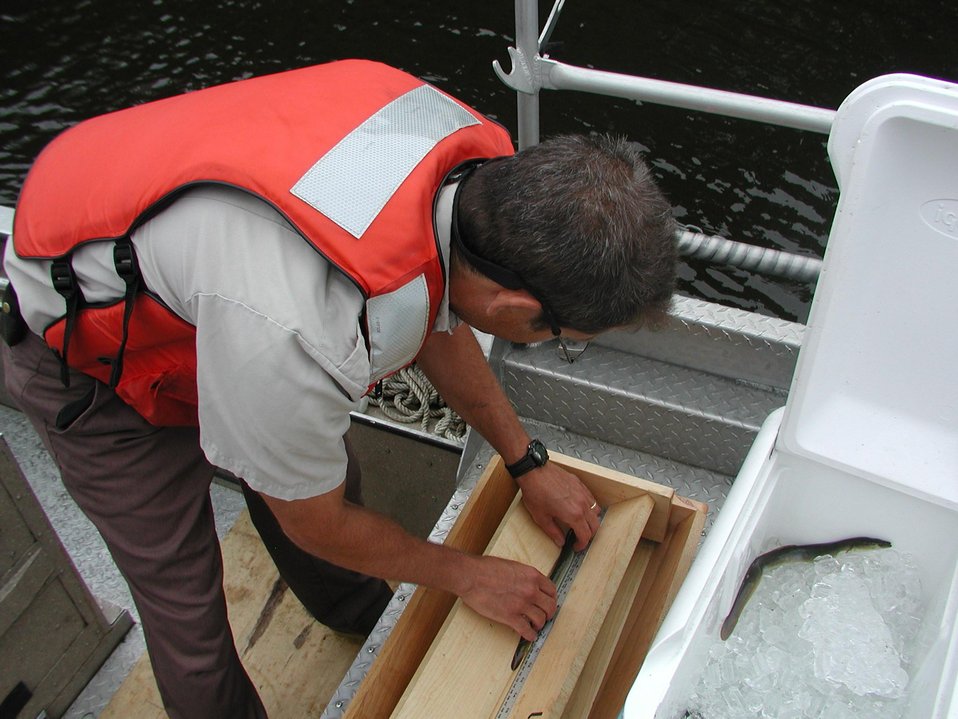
American eel

Ken Sprankle, Connecticut River Coordinator, measures eels from the Connecticut River.